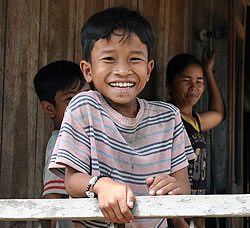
USAID supports cocoa farmer families in Dak Lak, Vietnam